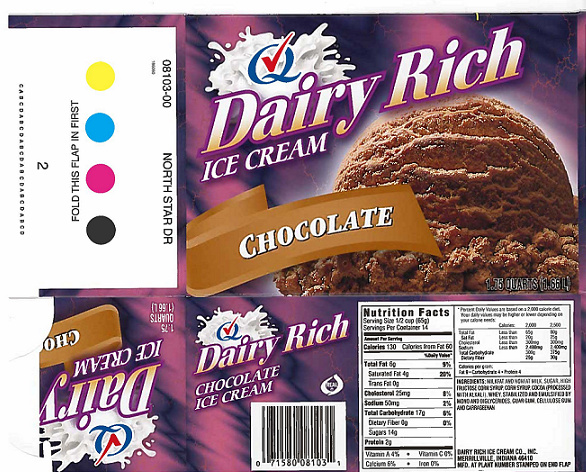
RECALLED - Chocolate Ice Cream

February 14, 2014 – Product Recall – Ice Cream Specialties Issues Allergy Alert On Undeclared Peanut Allergen In Dairy Rich Chocolate Ice Cream.